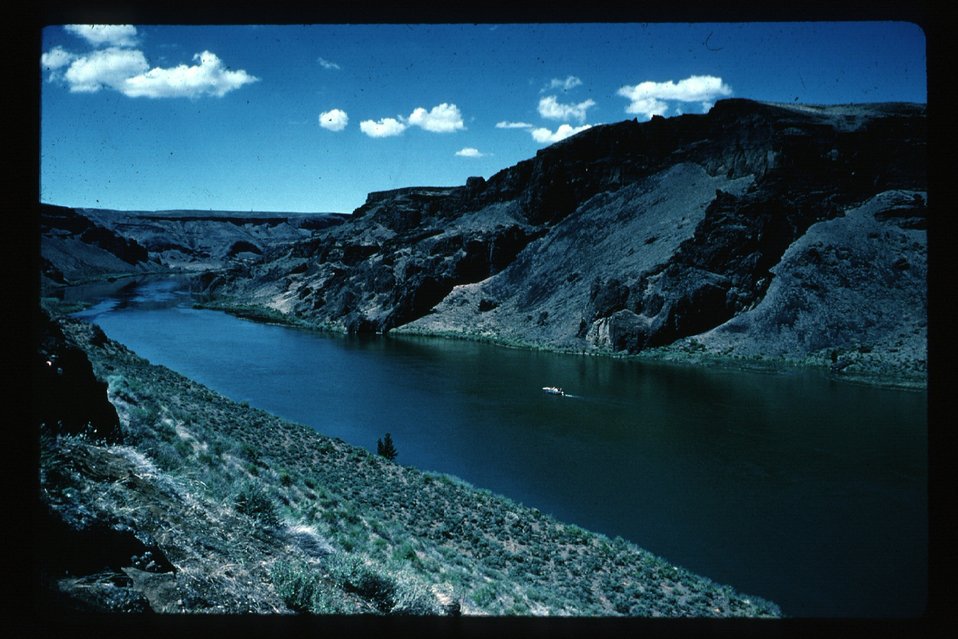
Snake River Canyon Owyhee Field Office LSRD Lower Snake River District